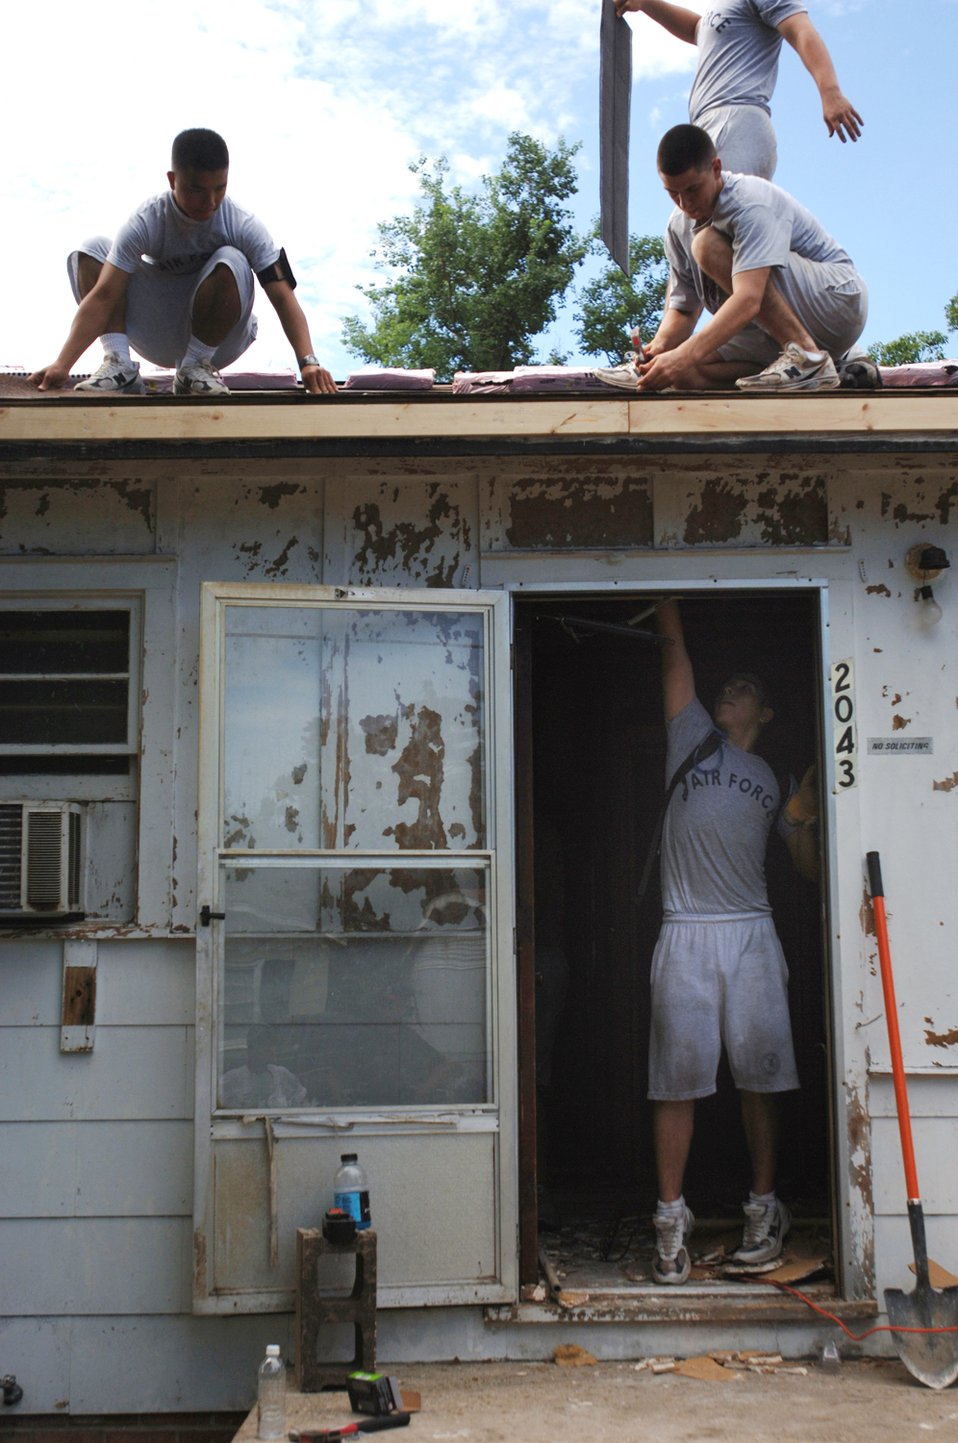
Helping the community recover

Trainees from Keesler Air Force Base, Miss., help repair a water-damaged roof in a house in Biloxi, Miss., Aug. 25. The civilian's house was heavily damaged by Hurricane Katrina one year ago. The Airmen are with the 332nd Training Squadron at Keesler AFB.